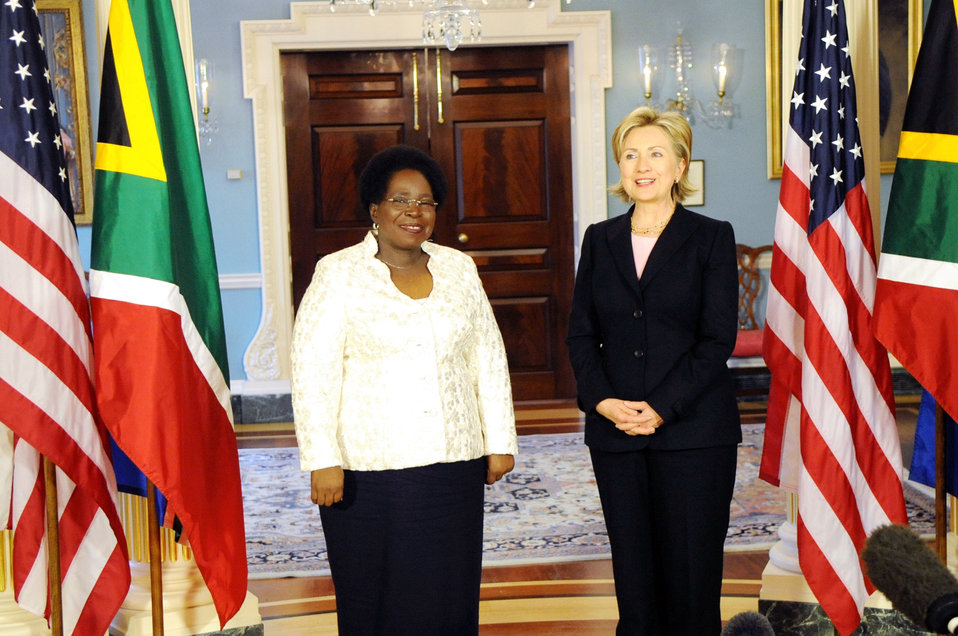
Secretary Clinton Meeting With South African Minister of Foreign Affairs

U.S. Secretary of State Hillary Rodham Clinton during bilateral meeting with South African Minister of Foreign Affairs H.E. Nkosazana Dlamini-Zuma of the Republilc of South Africa in Washington, DC March 19, 2009.